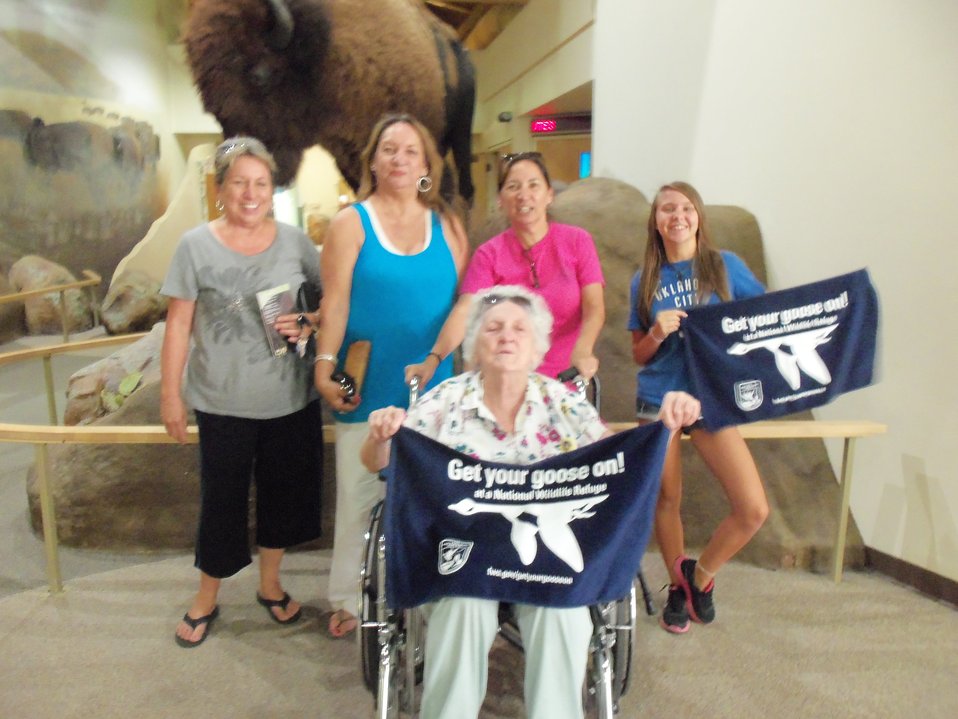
Get Your Goose On!

Wichita Mountains National Wildlife Refuge in Oklahoma.